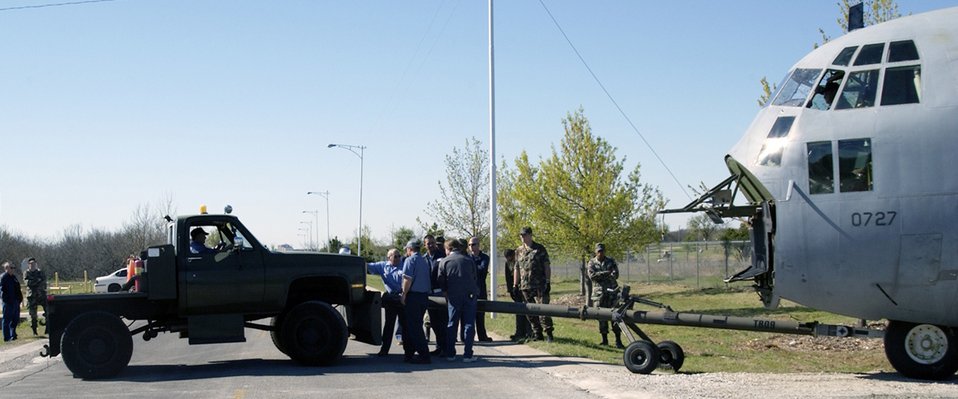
Medical readiness instructors receive new C-130 trainer

SHEPPARD AIR FORCE BASE, Texas -- Crews prepare to pull a C-130 Hercules to the 381st Training Squadron's medical readiness training site April 2. The aircraft became the newest piece of training equipment for medics scheduled to deploy on aeromedical evacuation assignment.